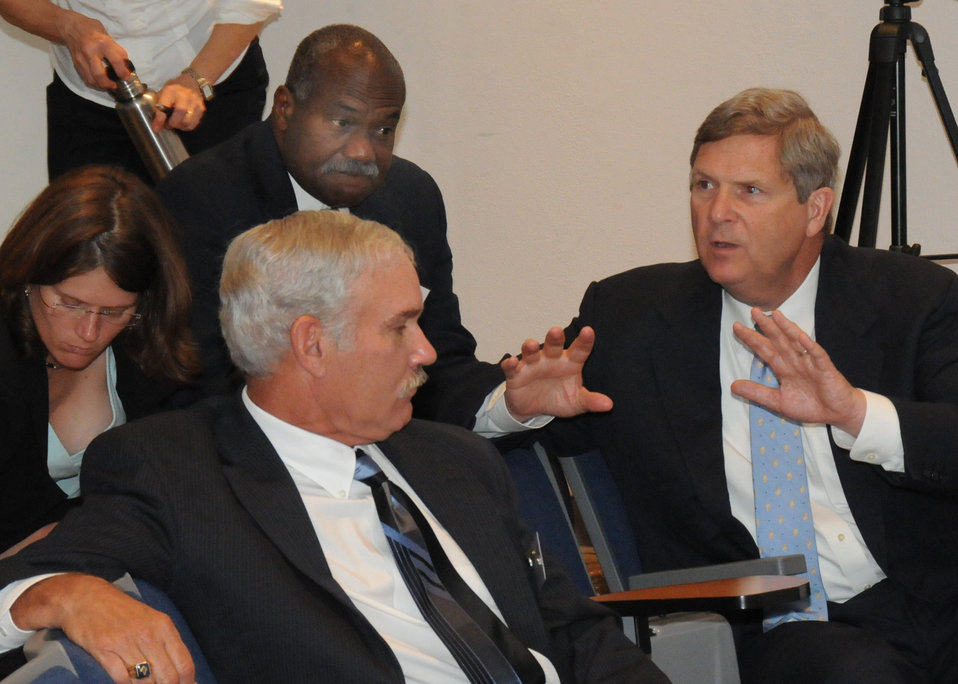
Agriculture Secretary Tom Vilsack speaks to members of the audience during one of the breakout sessions during the USDA Rural Summit held at Jefferson College in Hillsboro, MO., on Thursday, June 3, 2010. USDA Photo 10di1388-281.